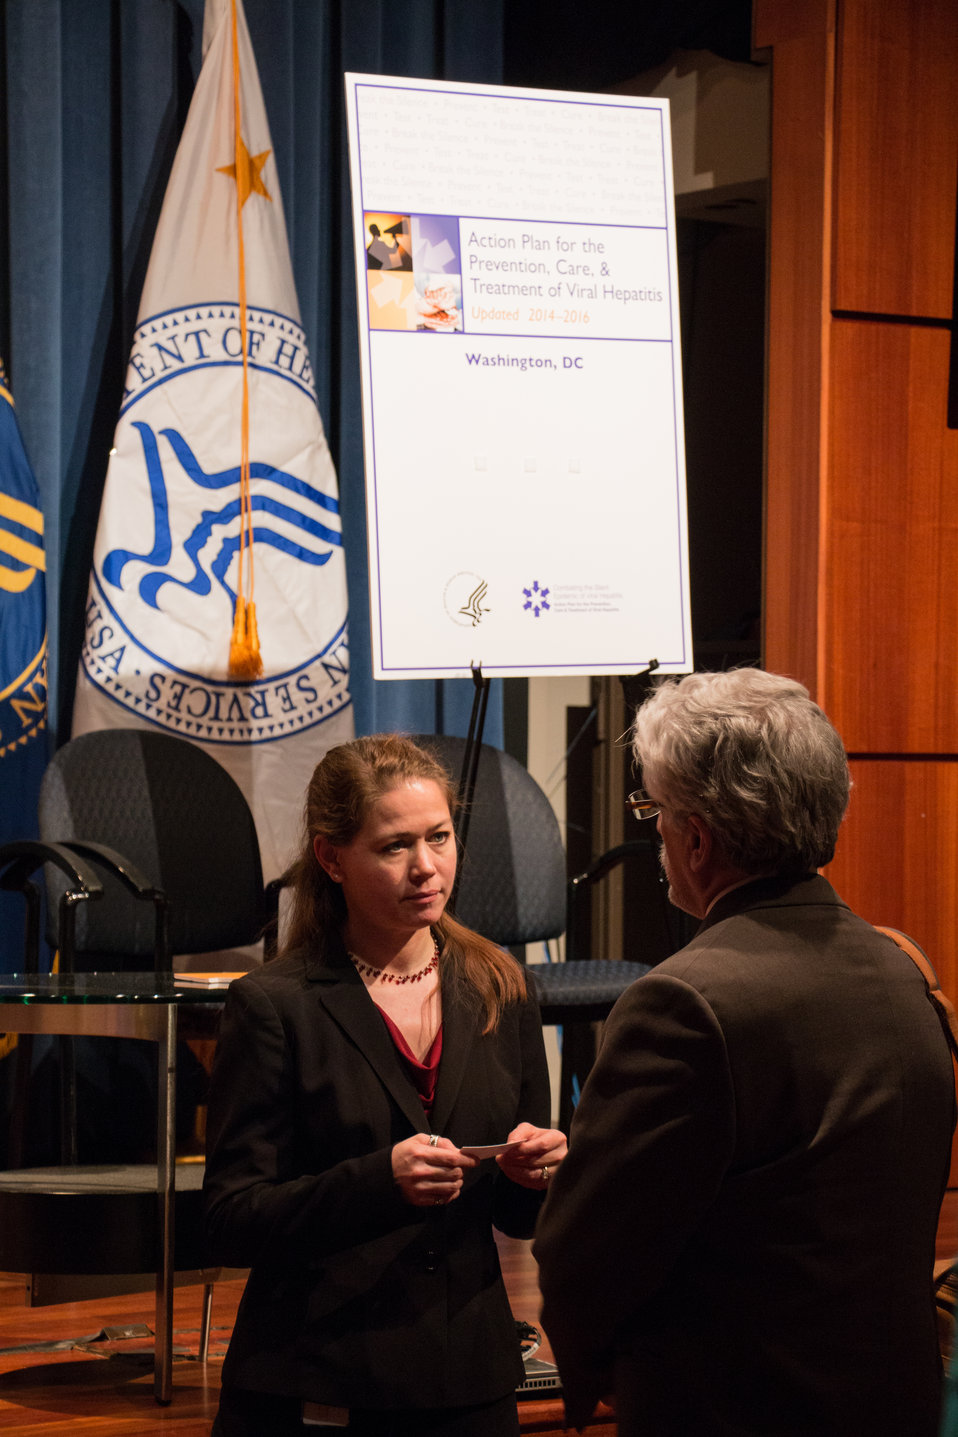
VHAP Launch (451 of 511)